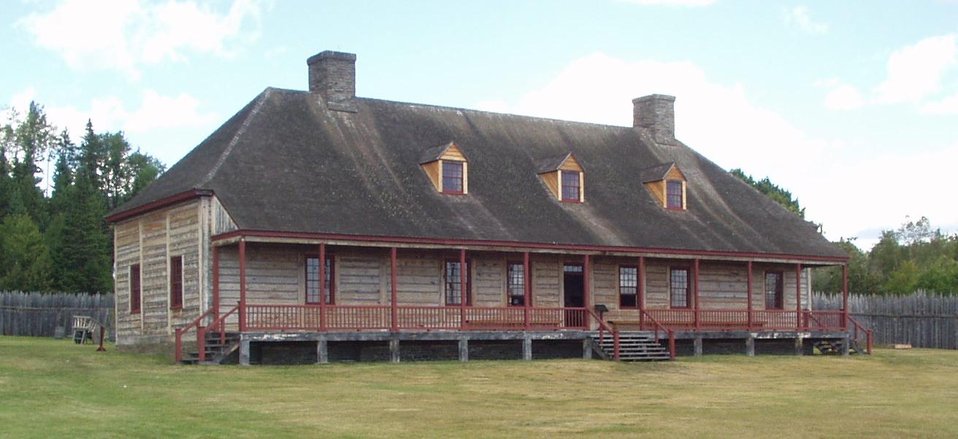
Grand Hall in Grand Portage National Monument, Minnesota, USA